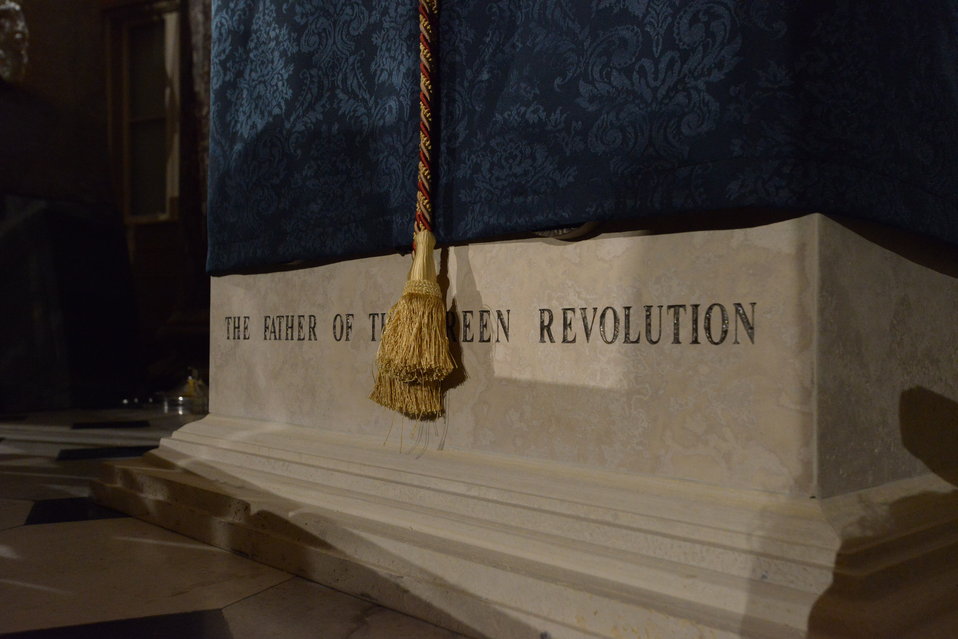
Interior of the National Statuary Hall at the U.S. Capitol in Washington, D.C. as preparations are made for the unveiling of the Dr. Norman Borlaug statue on Tuesday, Mar. 25, 2014. . At the base of the covered statue is engraved 'The Father of the Green Revolution'